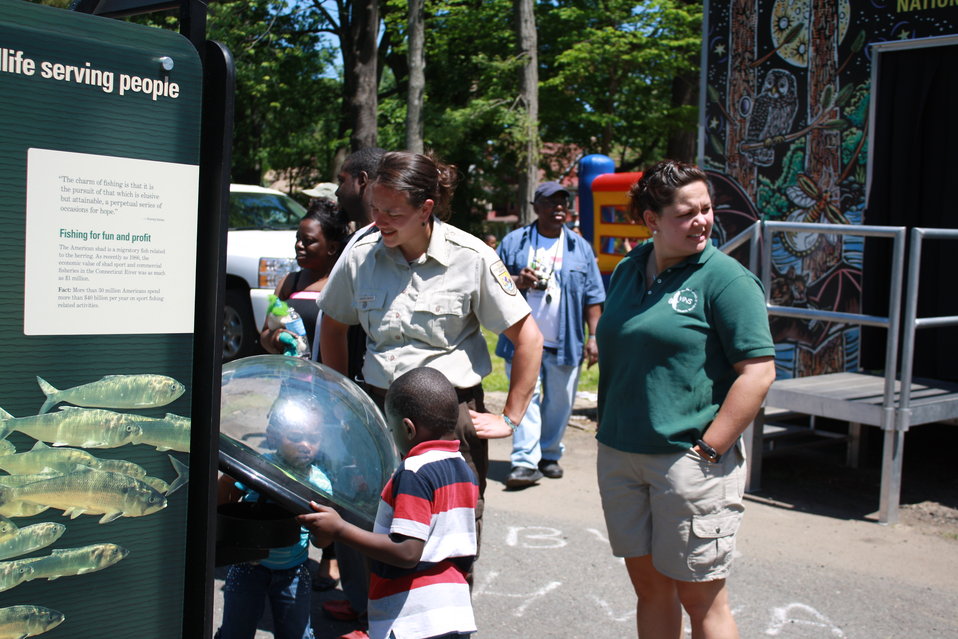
Exhibit at the WOW Express

WOW Express at Keney Park in Hartford, Conn.